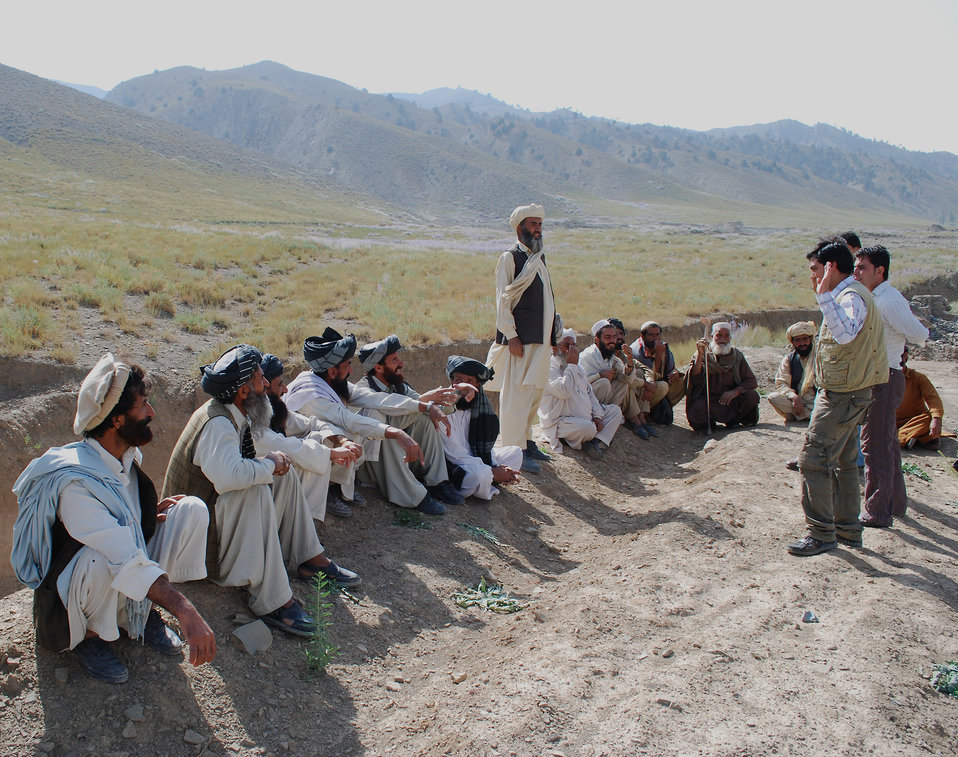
'On the Road' in Paktya Province